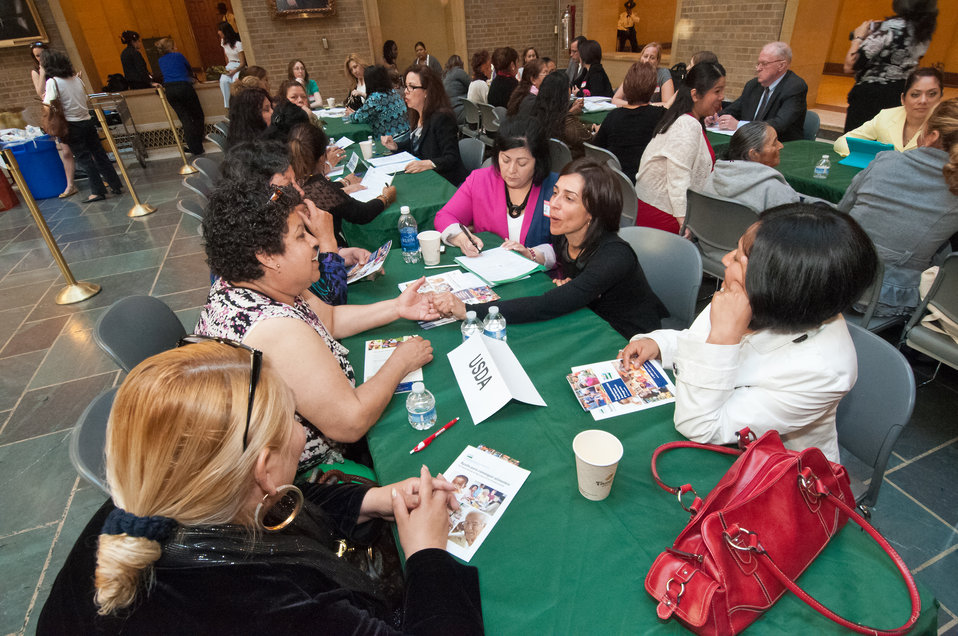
Adriana Zorrilla, Food and Nutrition Service (FNS), assists members of Alianza Nacional de Campesinas, an organization of Hispanic Farmworker women at the United States Department of Agriculture (USDA), Office of Advocacy and Outreach Breakfast Networking Reception in Washington, DC, Tuesday, April 9, 2013. The reception allowed the women to network and discuss their issues, priorities and opportunities in rural communities throughout the United States. The women were able to speak to representatives from nine Federal agencies with migrant programs: White House, USDA, Department of Health and Human Services (HHS), Housing and Urban Development (HUD), Department of Labor (DOL), Equal Employment Opportunity Commission (EEOC), Department of Education (DOE), Environmental Protection Agency (EPA) and United States Citizenship and Immigration Services (USCIS).